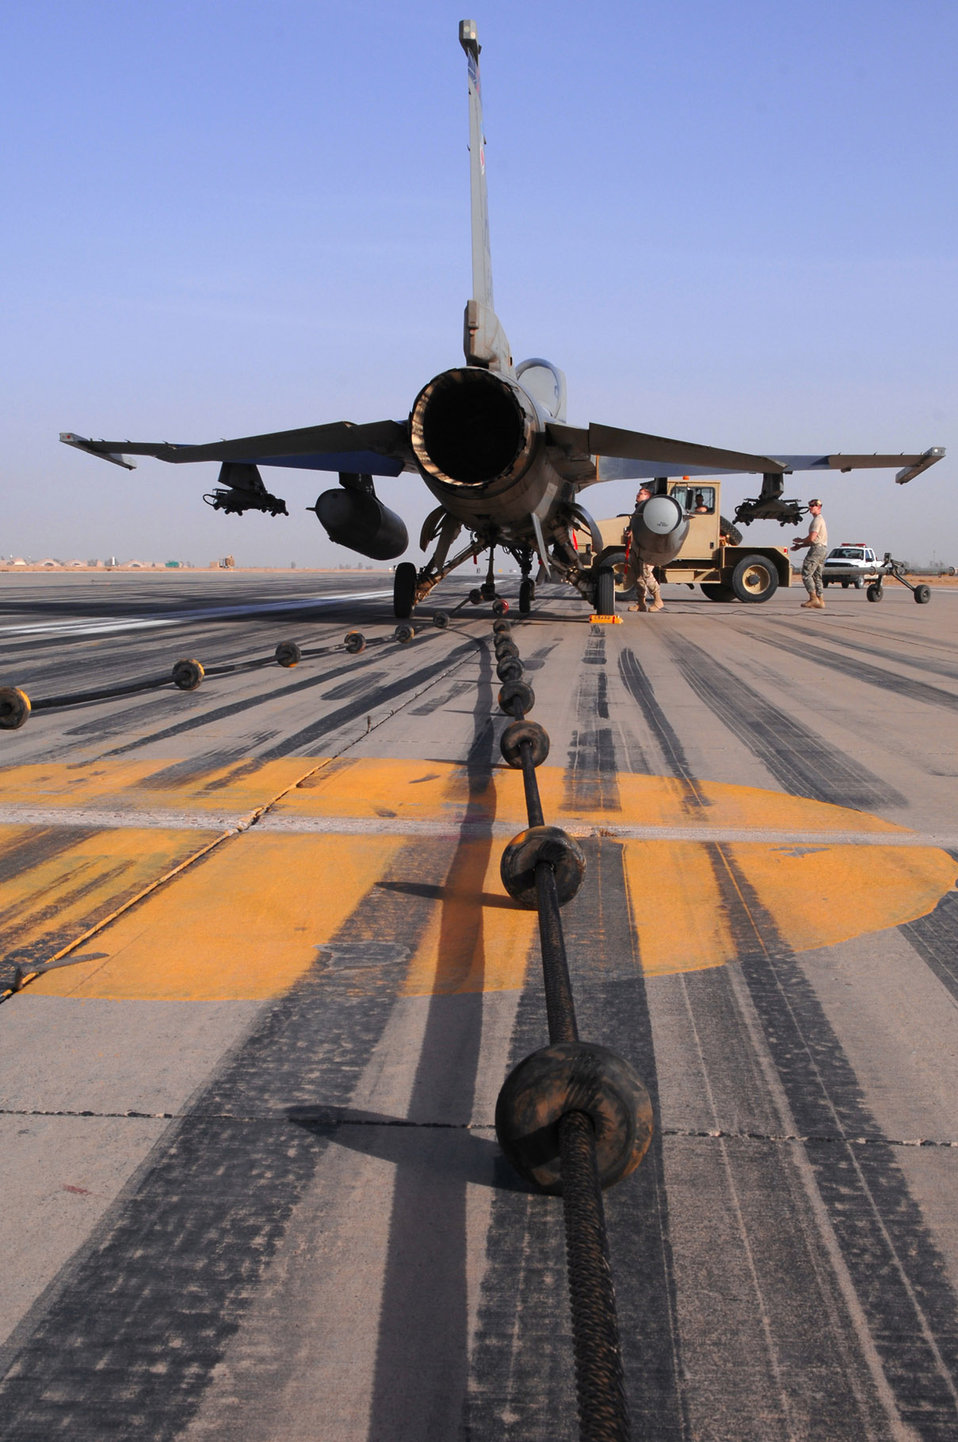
Braking action

An F-16 Fighting Falcon waits to be disconnected from an emergency arresting barrier system cable after passing a certification test of the system March 16 at Balad Air Base, Iraq. The system was installed by the 332nd Expeditionary Civil Engineer Squadron and is used to bring fighter aircraft to a smooth halt during emergency landings.